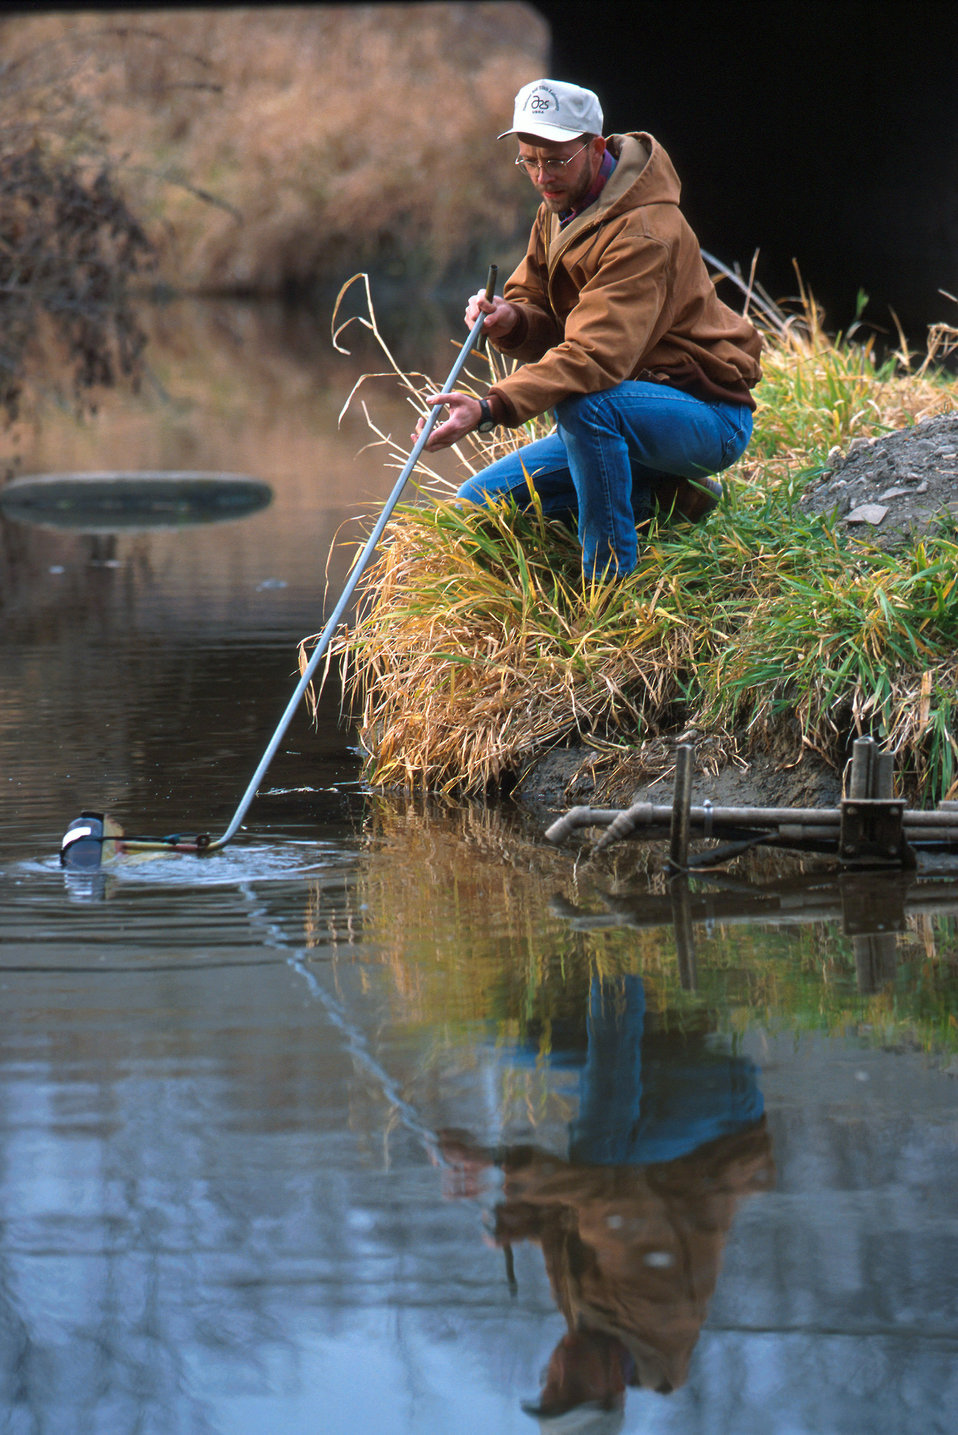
U.S. Department of Agriculture (USDA) Agricultural Research Service (ARS) technician Jeff Nichols collects a water sample from the Walnut Creek watershed in Ames, IA. Samples are collected weekly form this area and surrounding watersheds to study the effects farming practices have on water quality.